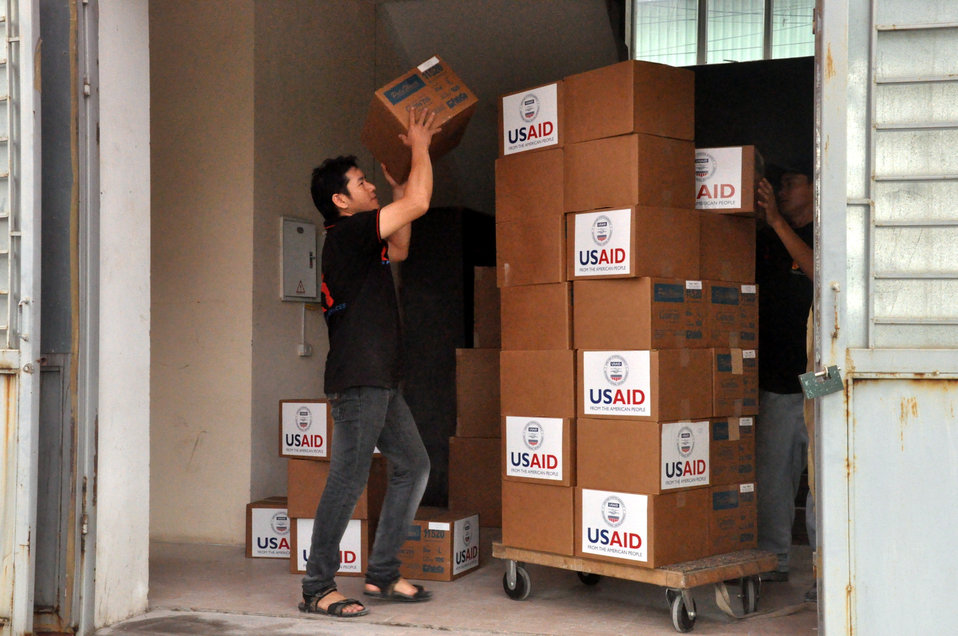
U.S. Provides Protective Gear to Help Prevent Disease Outbreaks